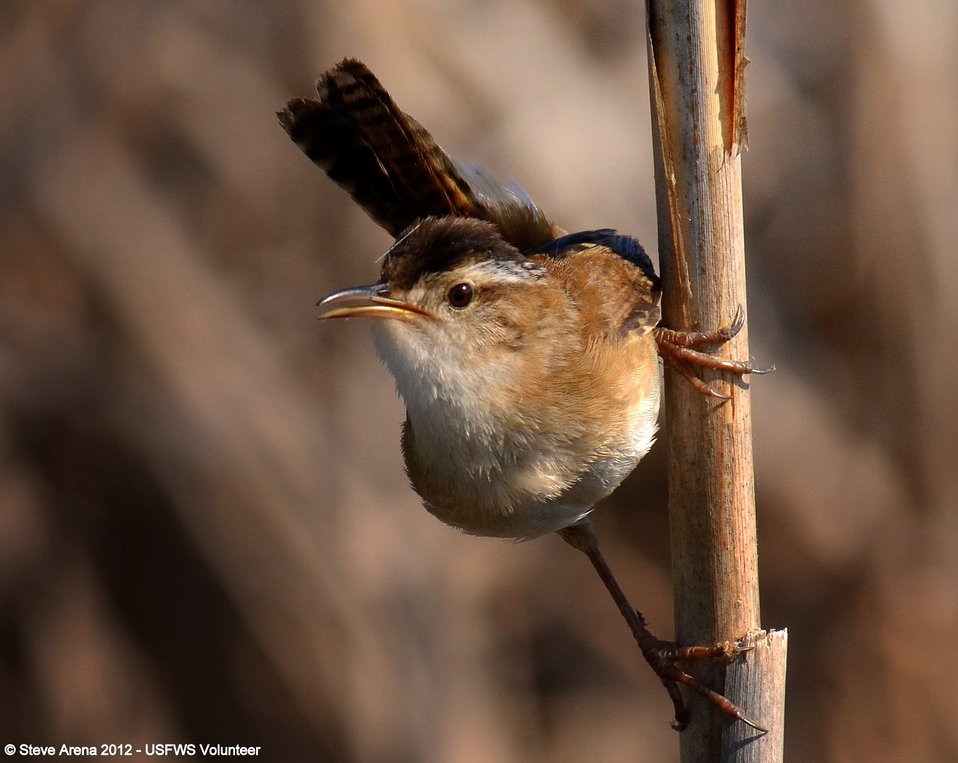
Marsh Wren (Cistothorus palustris) Great Meadows NWR, Concord, MA

Marsh Wren Great Meadows NWR, Concord, MA

Credit: Steve Arena/USFWS

18 May 2012